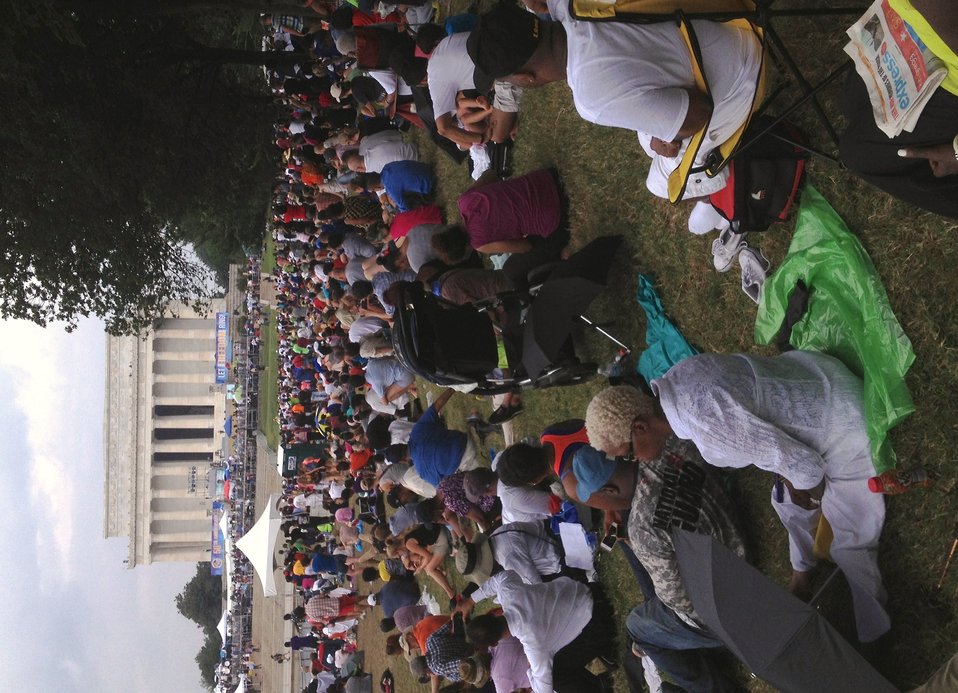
Mrs. Myrlie Evers speaks to marchers at the Lincoln Memorial during the March on Washington, D.C., on Wed., Aug. 28, 2013.